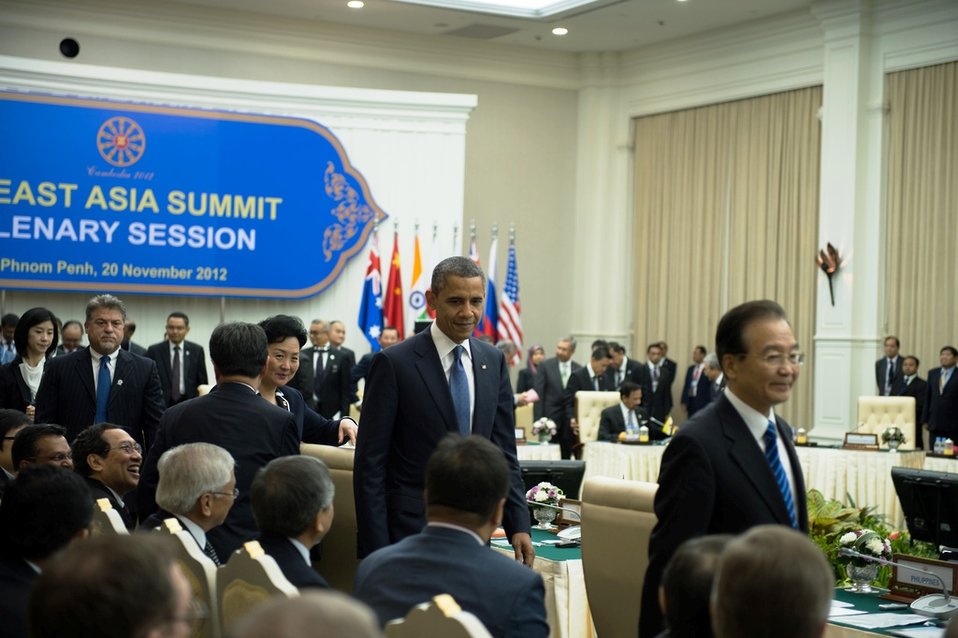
President Obama Participates in the East Asia Summit Plenary Session

U.S. President Barack Obama participates in the East Asia Summit Plenary Session in Phnom Penh, Cambodia, November 20, 2012. President Obama is the first U.S. President to visit Cambodia.